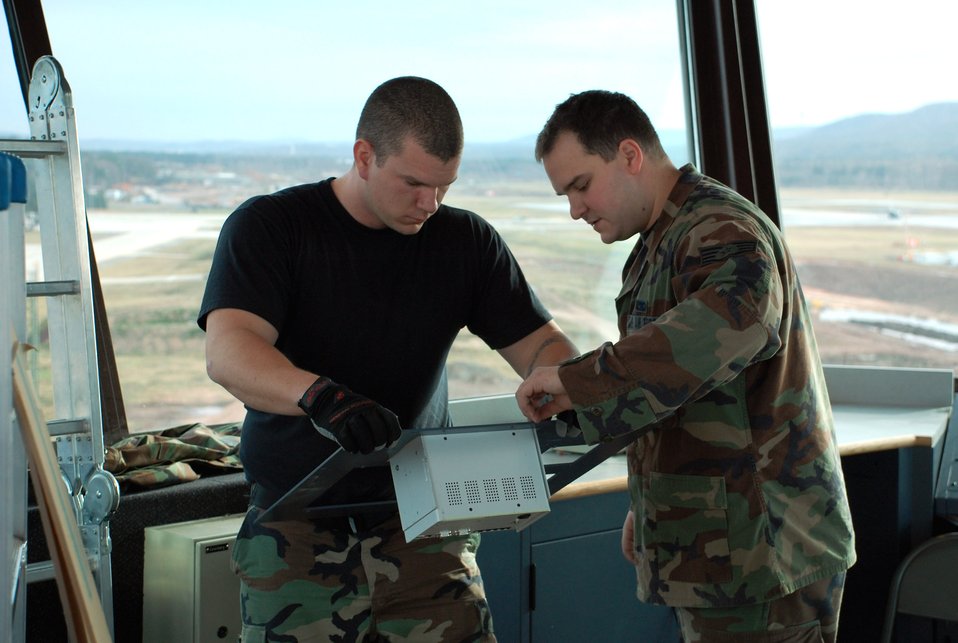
Ramstein tower renovations on schedule

Staff Sgts. Michael Sweet and David Coleman prepare to install a panel Feb. 14 during the renovation of the air traffic control tower at Ramstein Air Base, Germany. The tower is undergoing approximately $300,000 worth of upgrades. Work is progressing on time and within budget. The tower staff expects to be fully operational in the